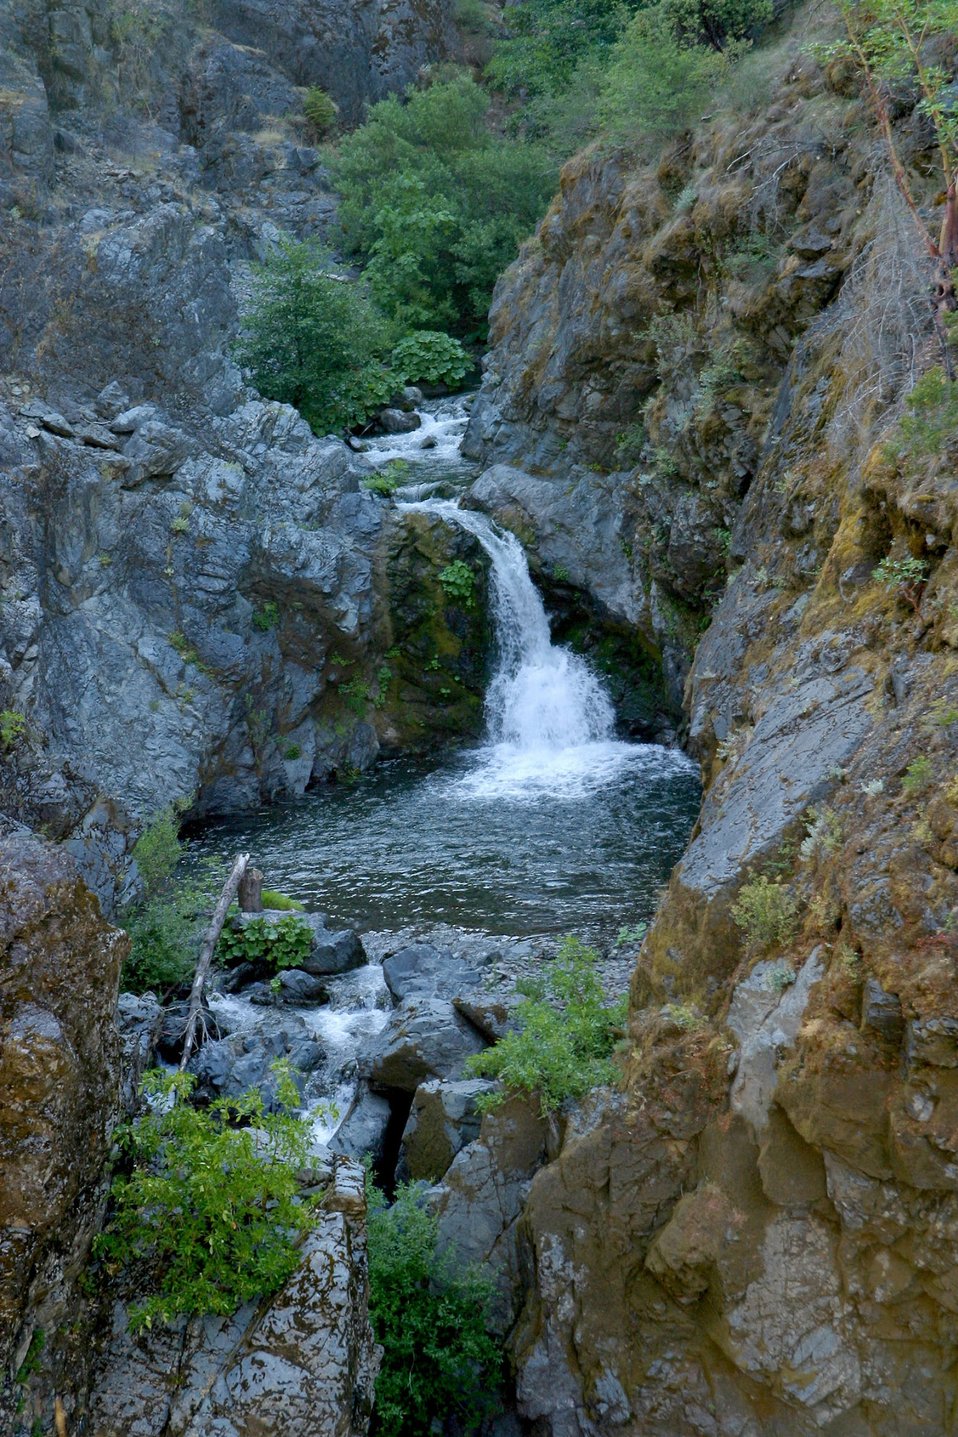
Stair Falls below Mule Creek.